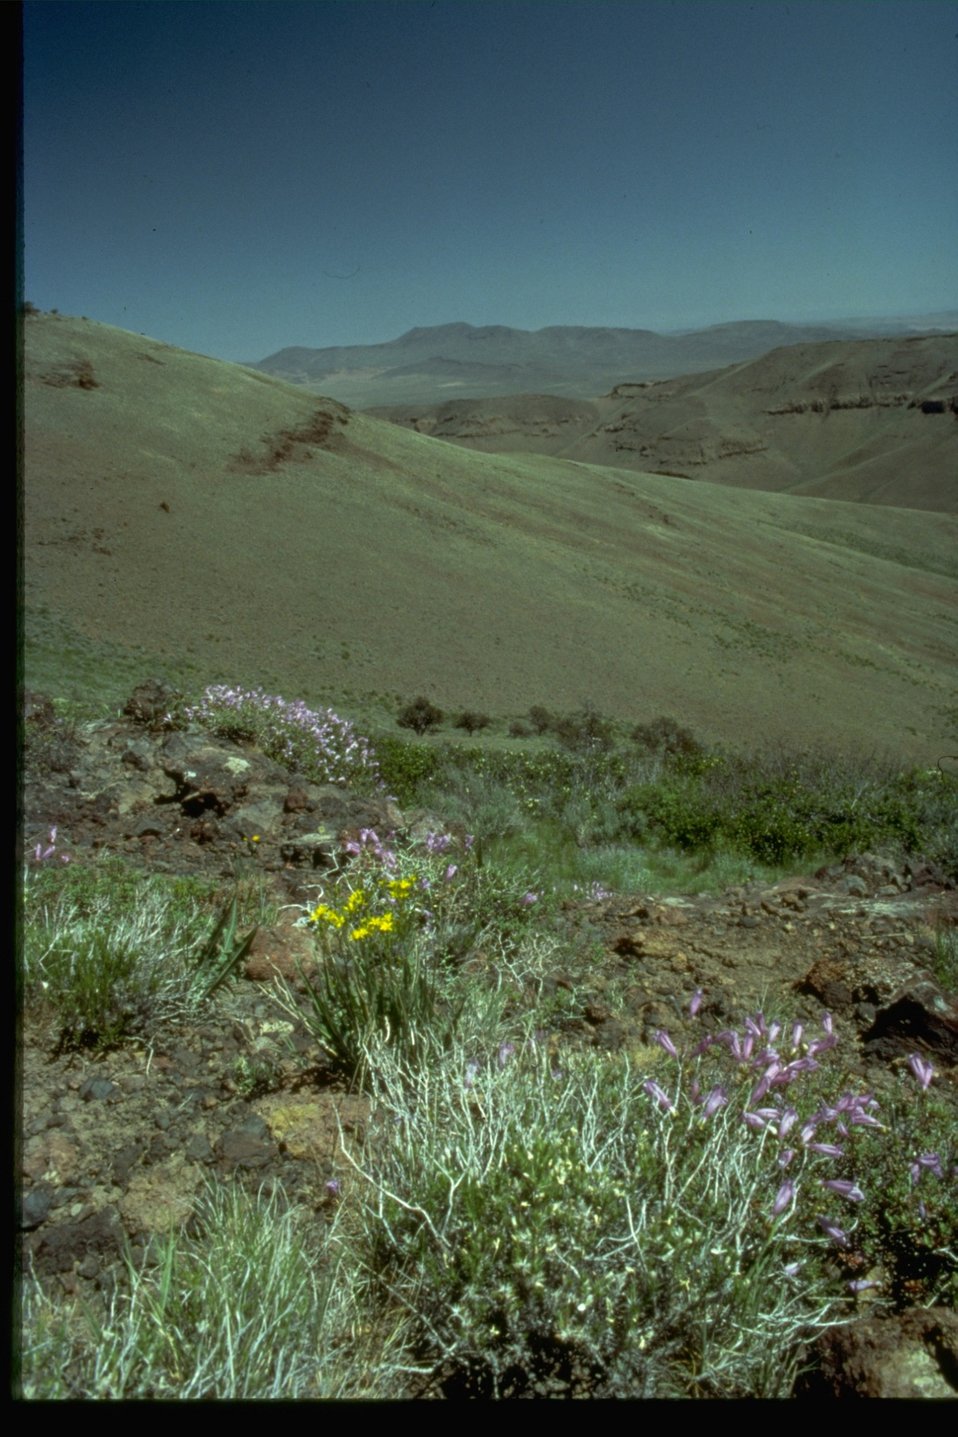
Wildflowers found on the grasslands in the Willow Creek Wilderness Study Area. OR 3-152.